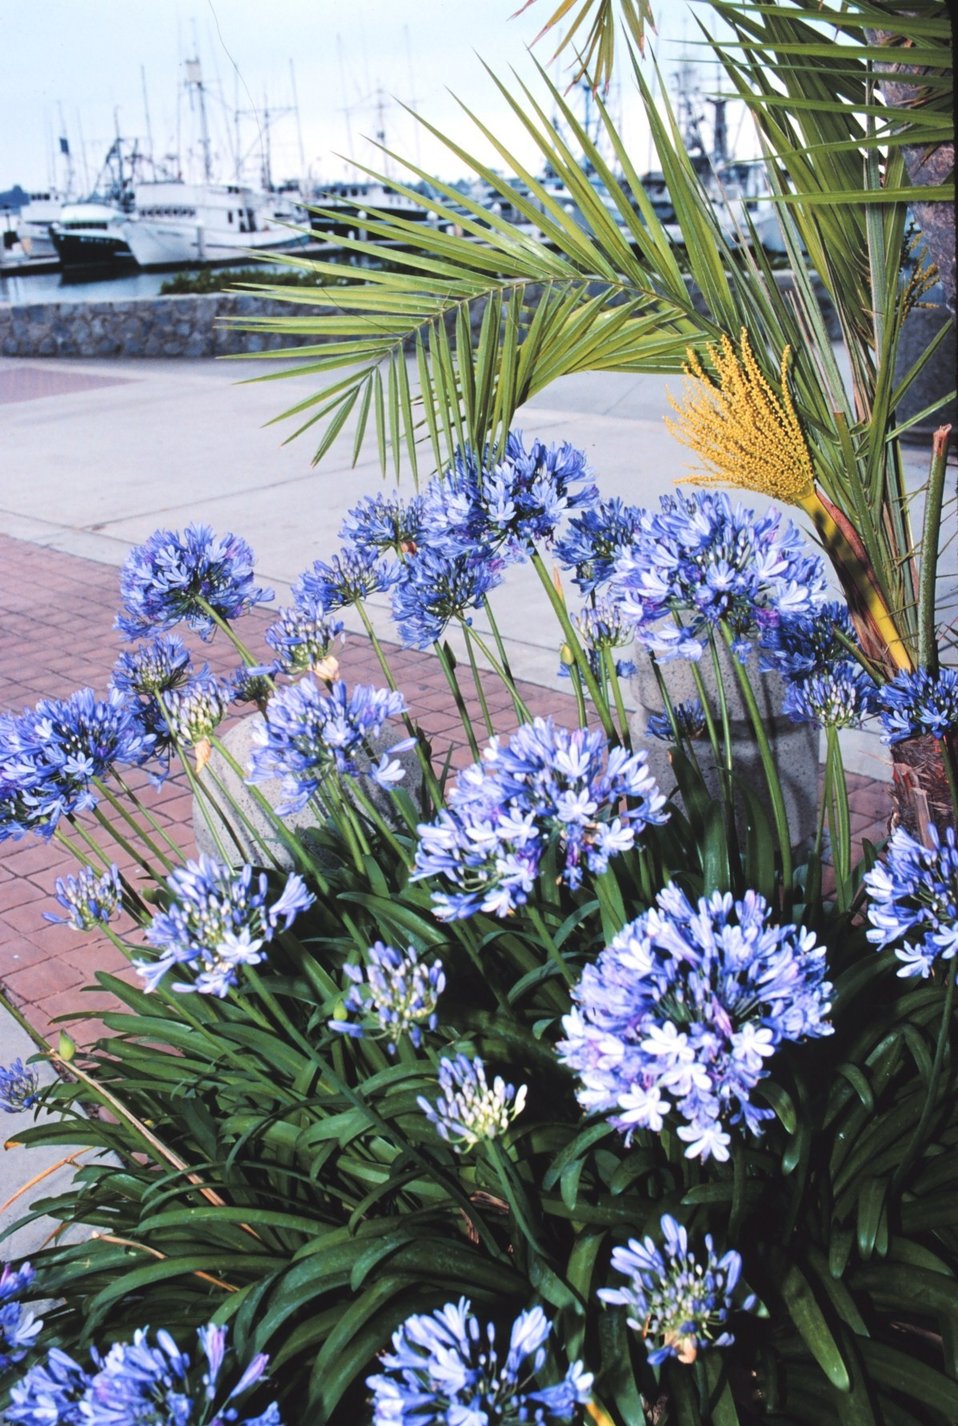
Tuna clippers at Tuna Harbor as seen from Tuna Park